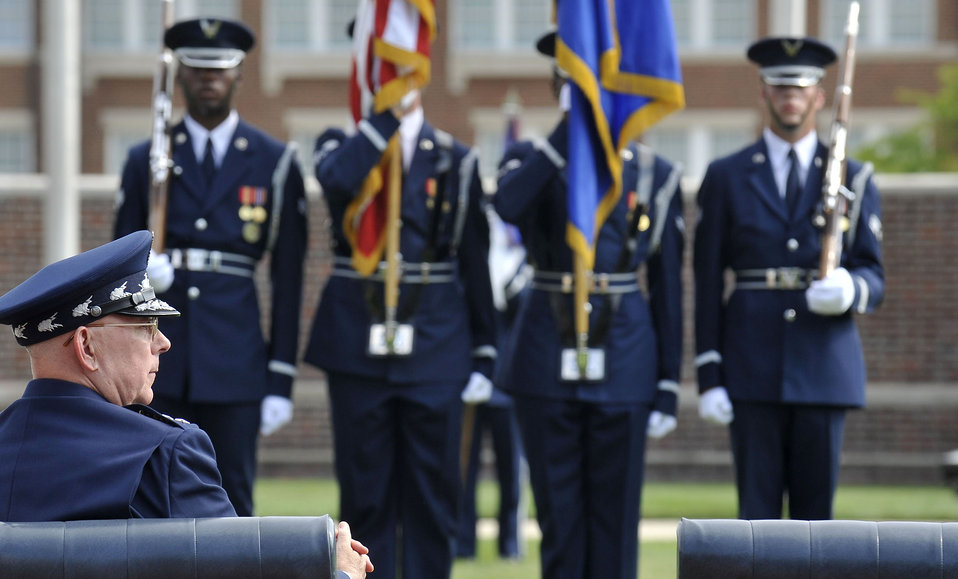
CSAF Retirement Ceremony

Gen. T. Michael Moseley listens while former Secretary of the Air Force Michael Wynne reflects on the general's career during his retirement ceremony on Bolling Air Force Base, D.C., July 11. General Moseley is the Air Force's 18th chief of staff. Mr. Wynne officiated the event.